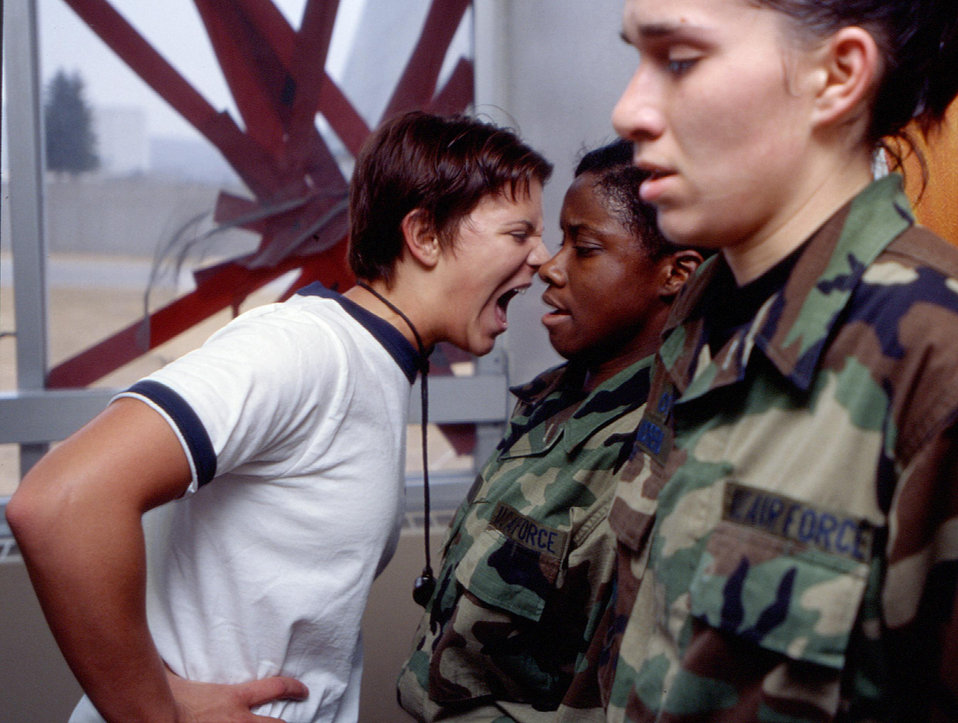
Can you hear me now?

U.S. AIR FORCE ACADEMY, Colo. -- Cadets began to see major changes in August 2003 during freshman basic cadet training. In the past, upperclass cadets would indoctrinate freshmen cadets with boot camp-style yelling combined with extensive physical training. But one of the short-term goals of the new academy leadership was to bring training more in line with the operational Air Force. Now, training is conducted in a more participatory manner, with mentoring and some cold, hard stares as part of the new “four-class” system of leadership development that occurs during all four class years.